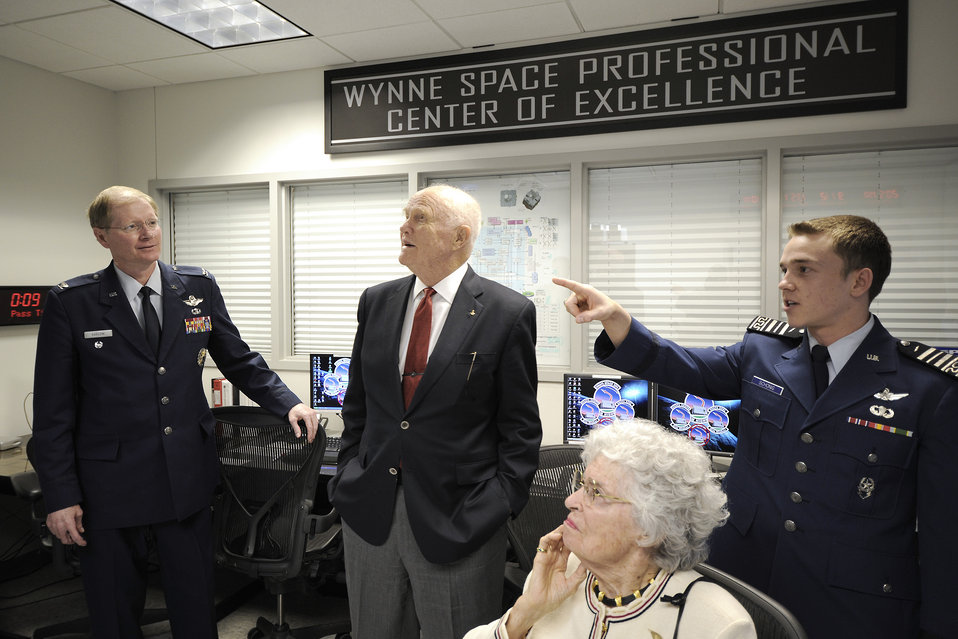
Academy honors Senator Glenn

Sen. John Glenn and his wife Annie are briefed by Cadet 1st Class Jacob Schonig April 22 about FalconSat operations in the Wynne Space Professional Center of Excellence. Senator Glenn was at the Academy to be honored as the recipient of the 2008 Thomas D. White National Defense Award.